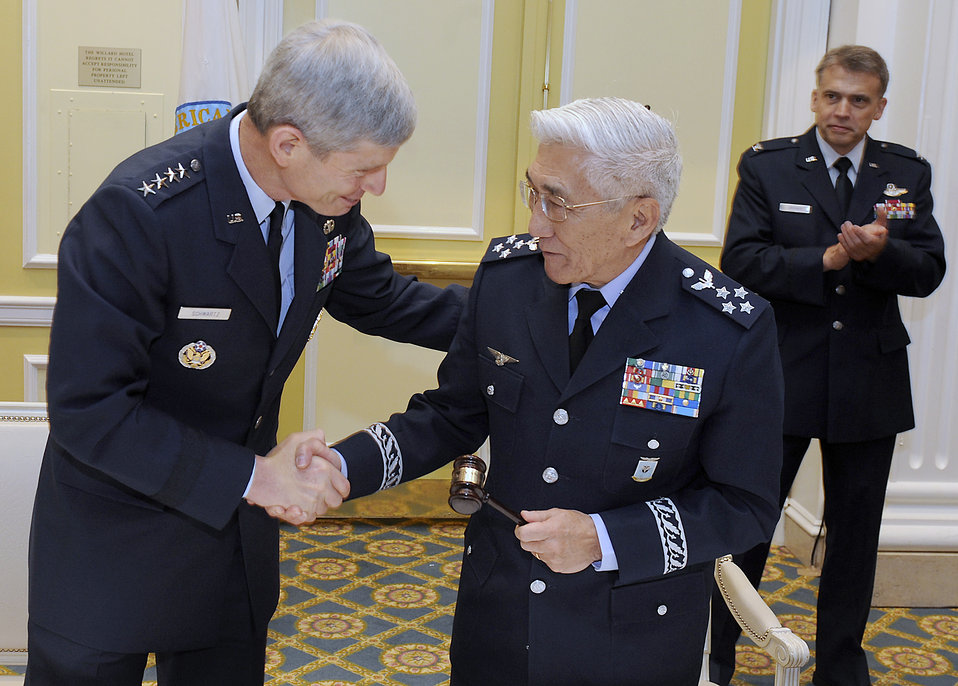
CONJEFAMER

U.S. Air Force Chief of Staff Gen. Norton Schwartz passes a gavel and congratulates Air Lt. Gen. Juniti Saito, the aeronautical commander of the Brazilian air force, during